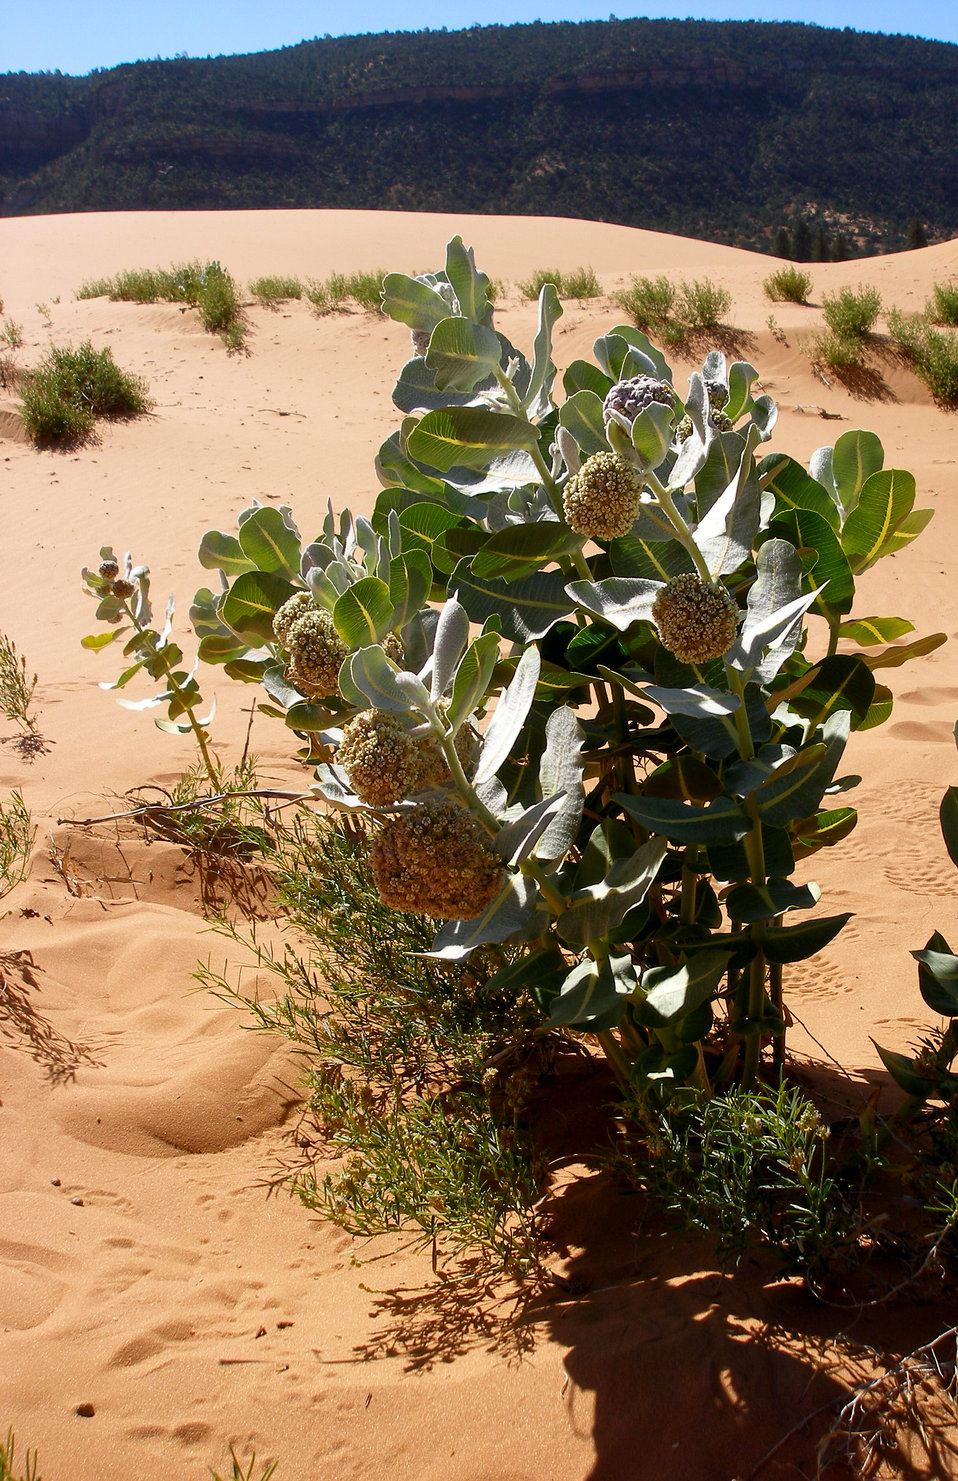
Welsh milkweed (Asclepias welshii) Habitat

This species is restricted to active sand dunes derived from Navajo Sandstone in sagebrush, juniper and Ponderosa pine communities between 5,000 and 6,230 ft. in elevation. It is endemic to Kane County, UT, and Coconino, Navajo & Apache counties, AZ. The Welsh milkweed is listed threatened.